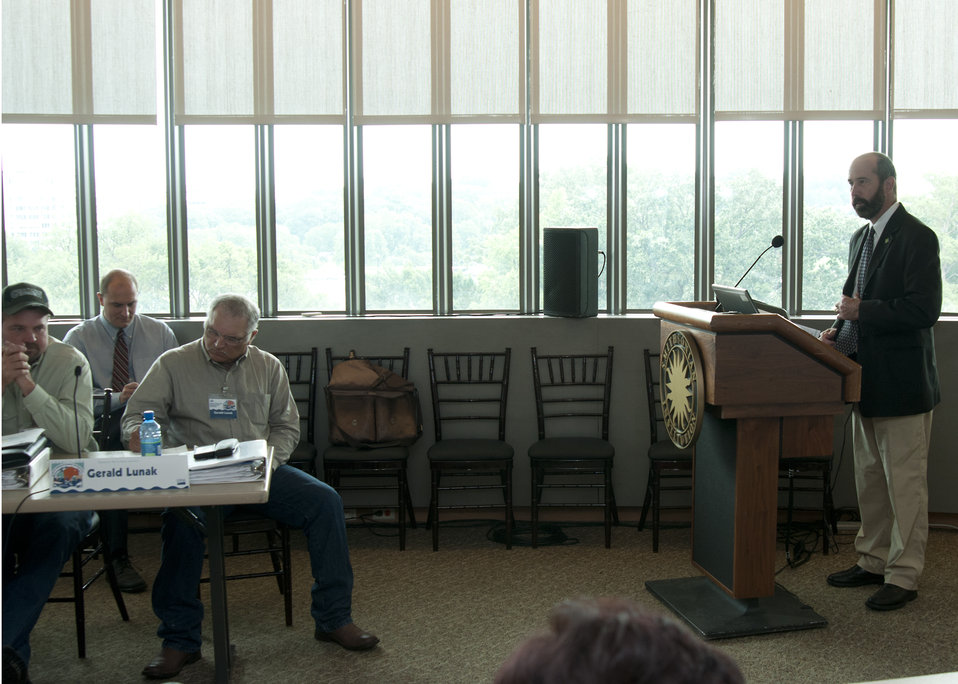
Farm Credit Council Vice President Young, Beginning, Small Farmer Programs and Outreach Gary Matteson speaks during the public comment session of the first business meeting of the U.S. Department of Agriculture’s (USDA) Council for Native American Farming and Ranching (CNAFR) held at the National Museum of the American Indian in Washington, D.C., on Wednesday, Aug. 15, 2012. CNAFR was created to advise the Secretary on ways to eliminate barriers to participation for Native American Farmers and Ranchers in USDA programs. The Council was established as part of the Keepseagle settlement, and is conducted under the oversight of USDA's Office of Tribal Relations under the Office of the Secretary of Agriculture.